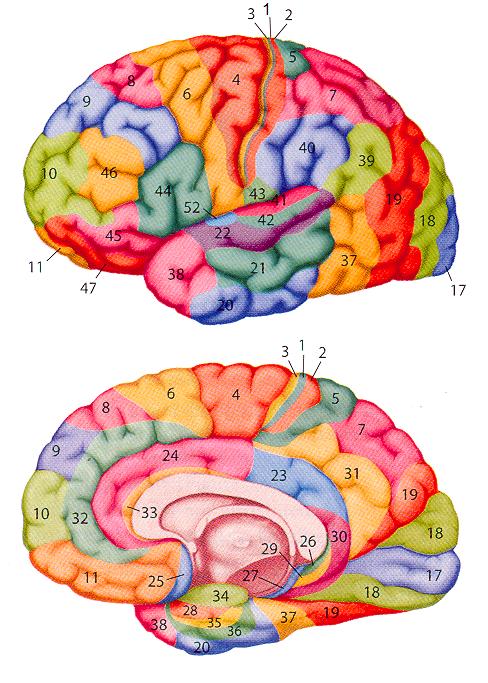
17cortex